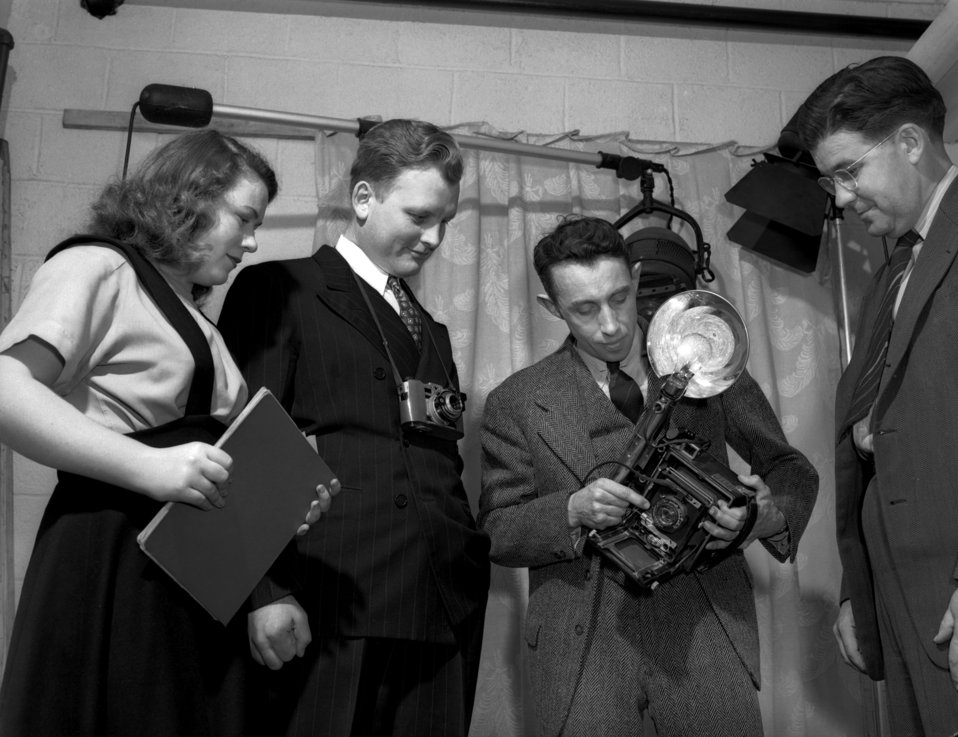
Oak Ridge Camera Club New Officers

3233-2 DOE photo Ed Westcott 1-10-1947 Oak Ridge Tennessee